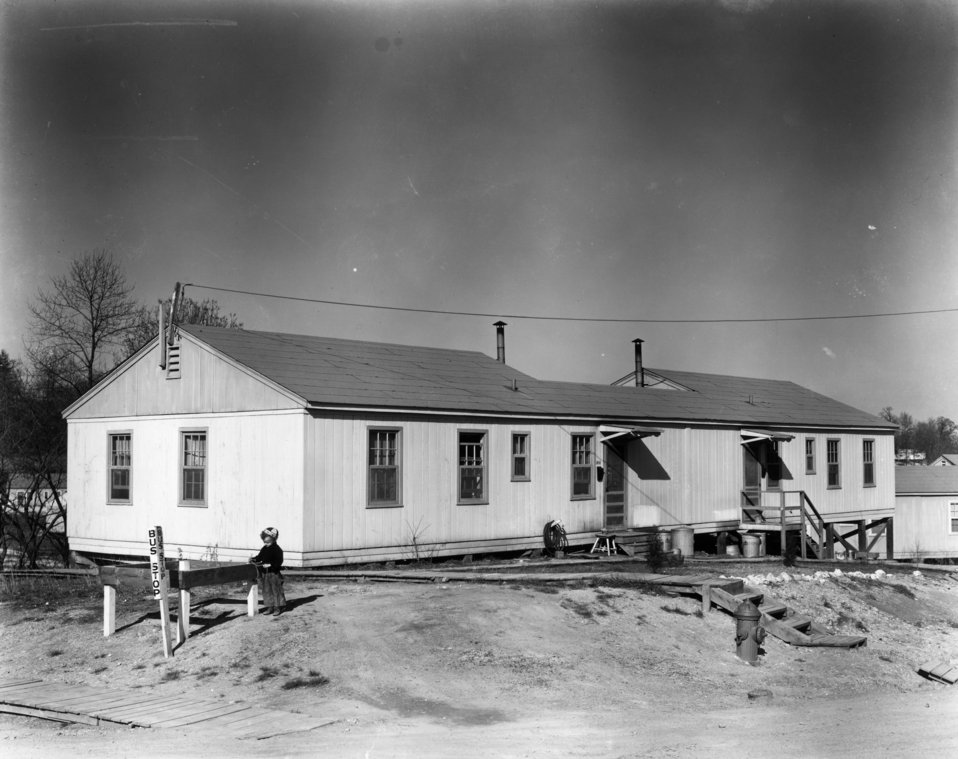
Housing at Oak Ridge